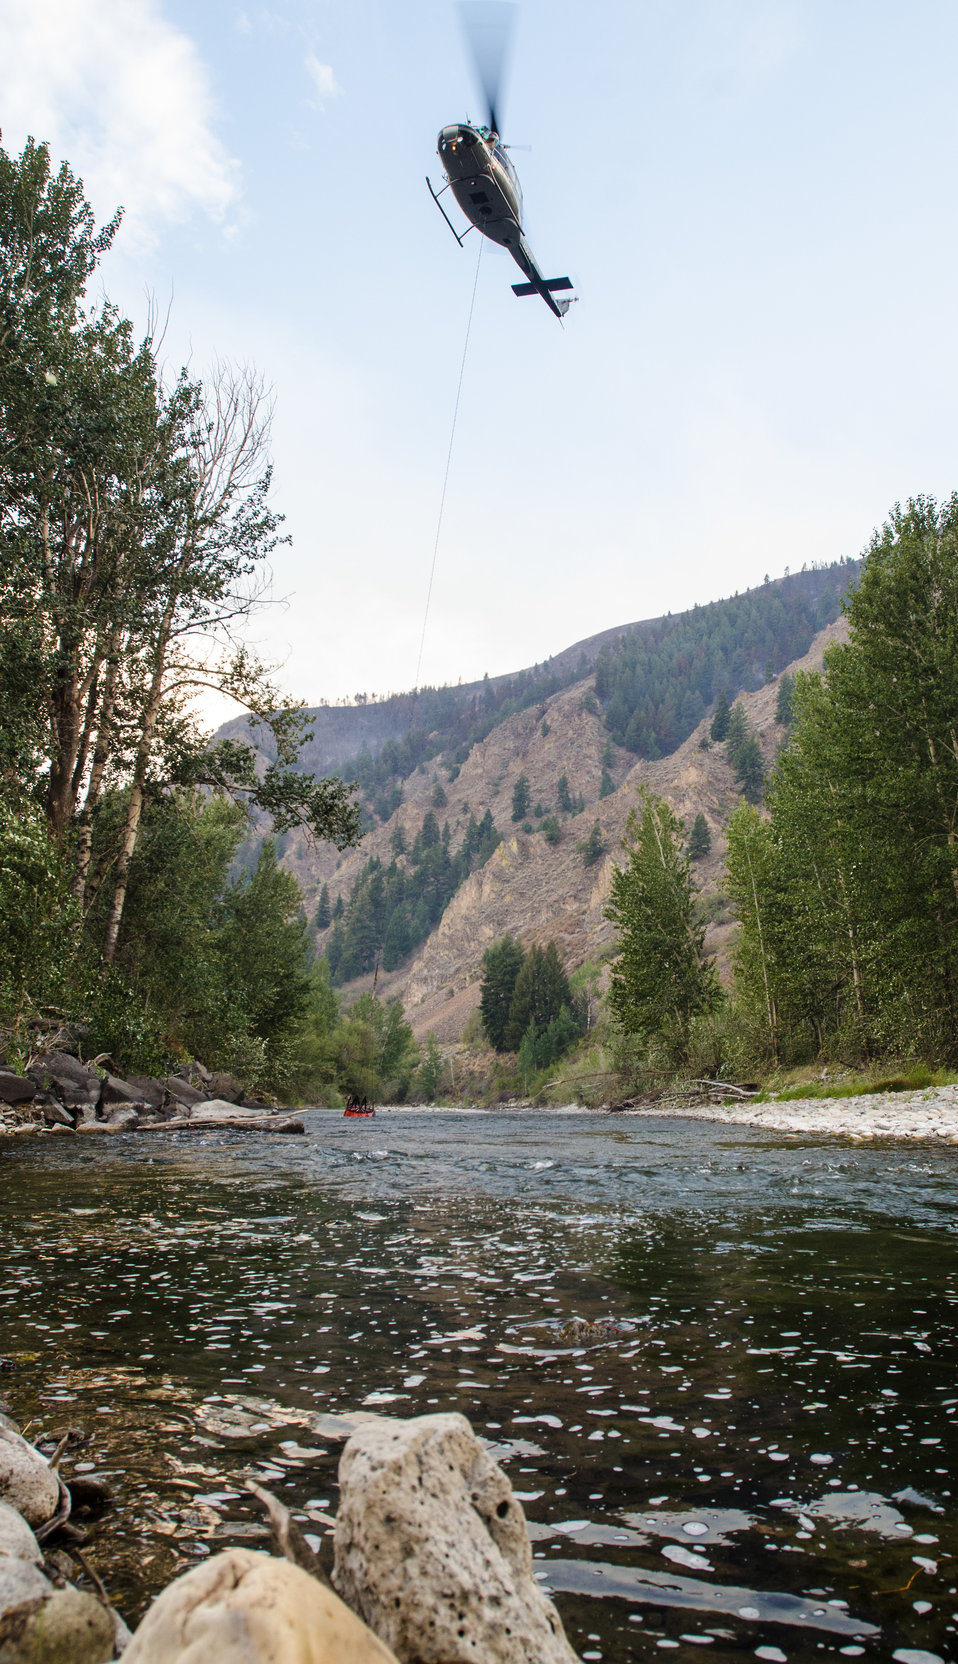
A Bell UH-1H helicopter lifts a flexible bucket of water with a long line from the Wood River for a water drop on the Carbonate Ridge high above and next to the river, during Beaver Creek Complex Wildlands Fire, west of Hailey, ID, on Monday, Aug 19, 2013.